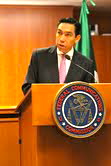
Announcement of Bilateral Initiative to Combat Stolen Mobile Devices 11.13.2012

Under-Secretary of Communications for Mexico Hector Olavarria Tapia speaking at the speaking at the announcement of the bilateral initiative to combat stolen mobile devices.